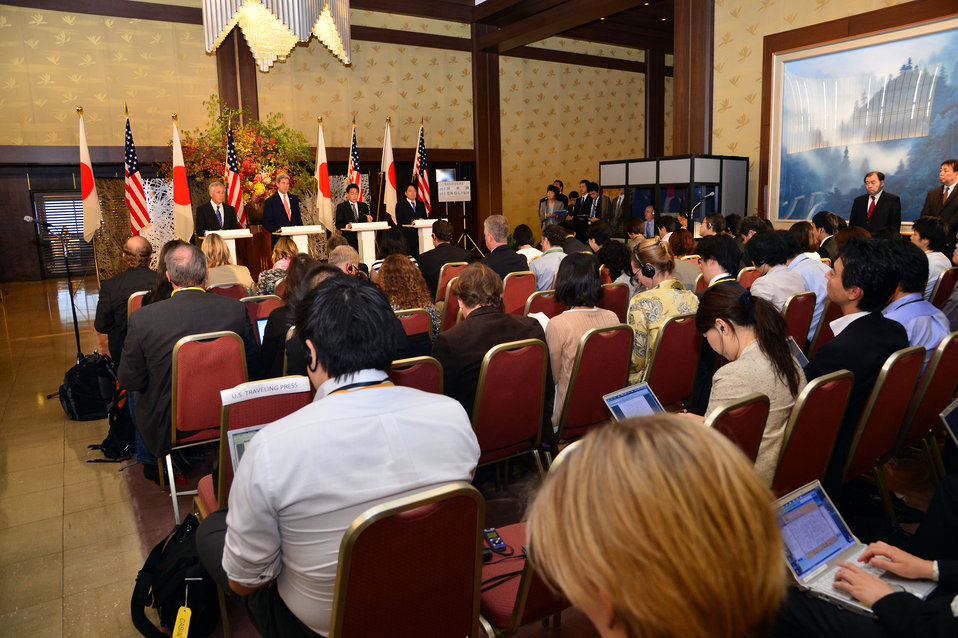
Secretary Kerry Participates in a Joint Press Conference

U.S. Secretary of State John Kerry participates in a joint press conference with U.S. Secretary of Defense Chuck Hagel, Japanese Defense Minister Itsunori Onodera, and Japanese Foreign Minister Fumio Kishida in Tokyo, Japan, on October 3, 2013.